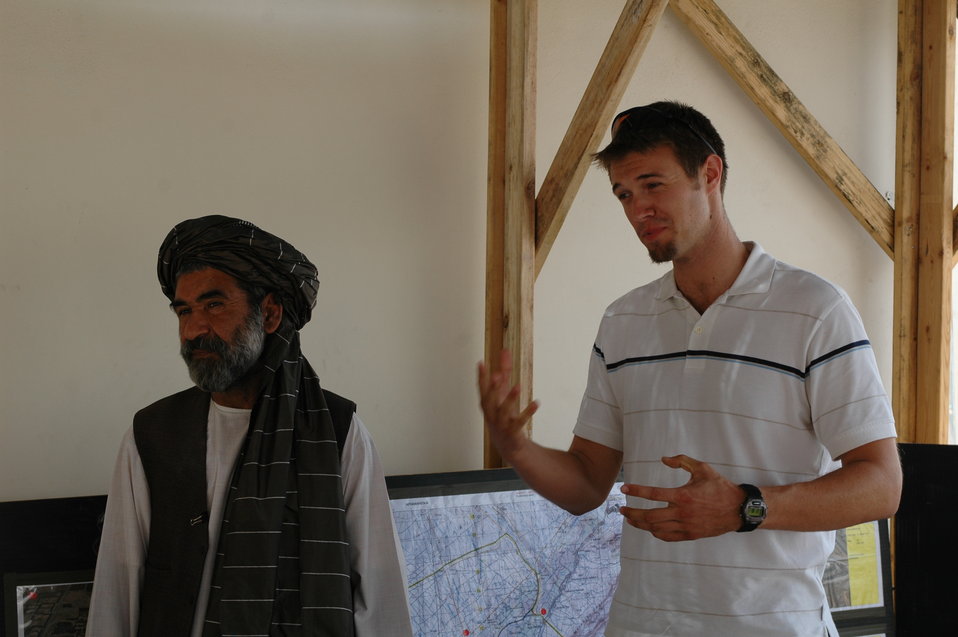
CODEL Berman